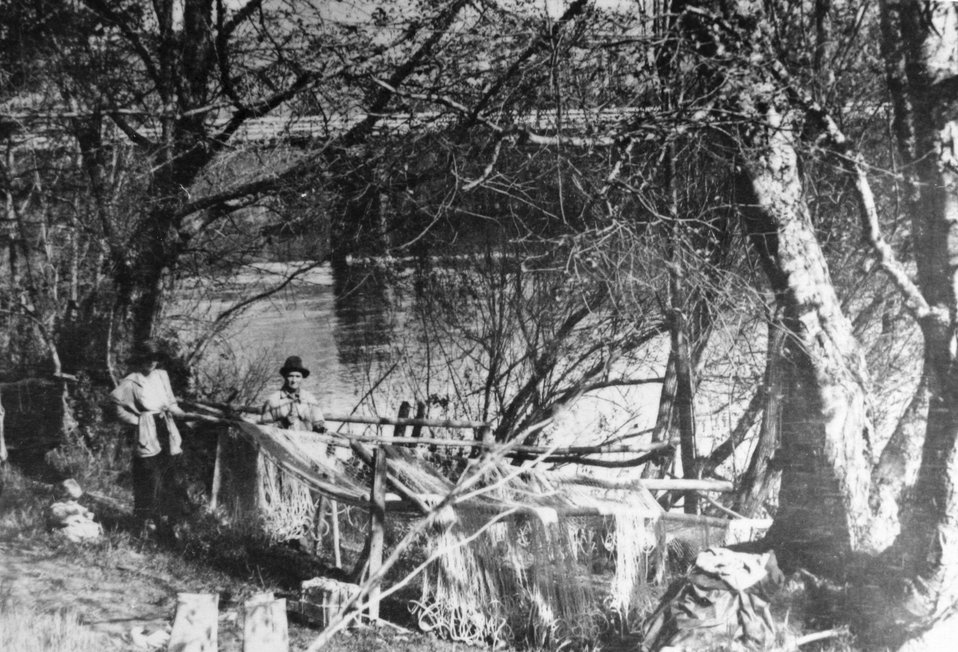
Preparing fish nets on the Rogue River